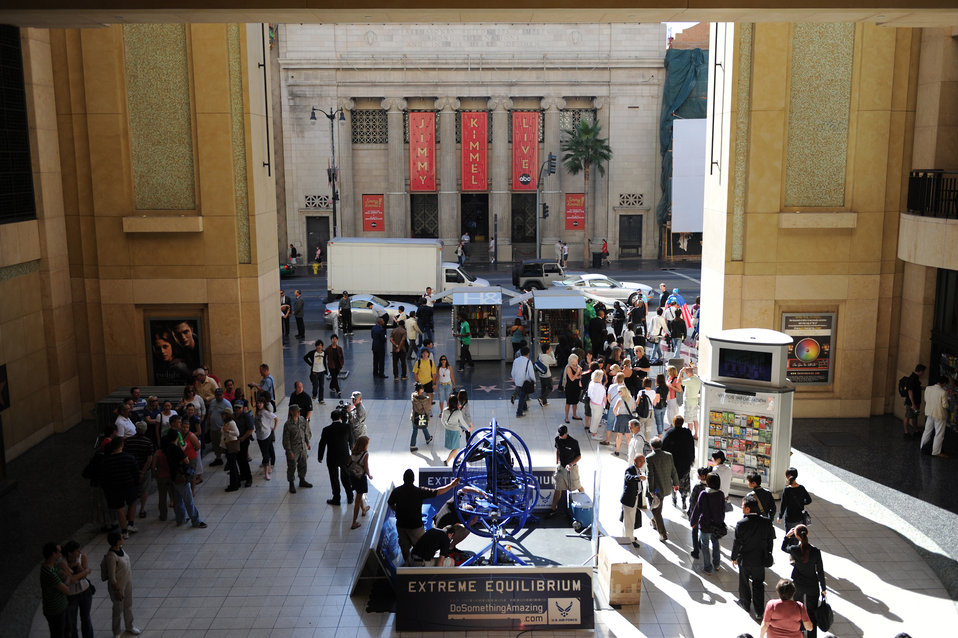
Air Force Expo in Hollywood

Air Force Week-Los Angeles kicks off Nov. 14 at Hollywood and Highland Boulevard in Los Angeles, Calif. Air Force Week runs until Nov. 21 and has events throughout the area.